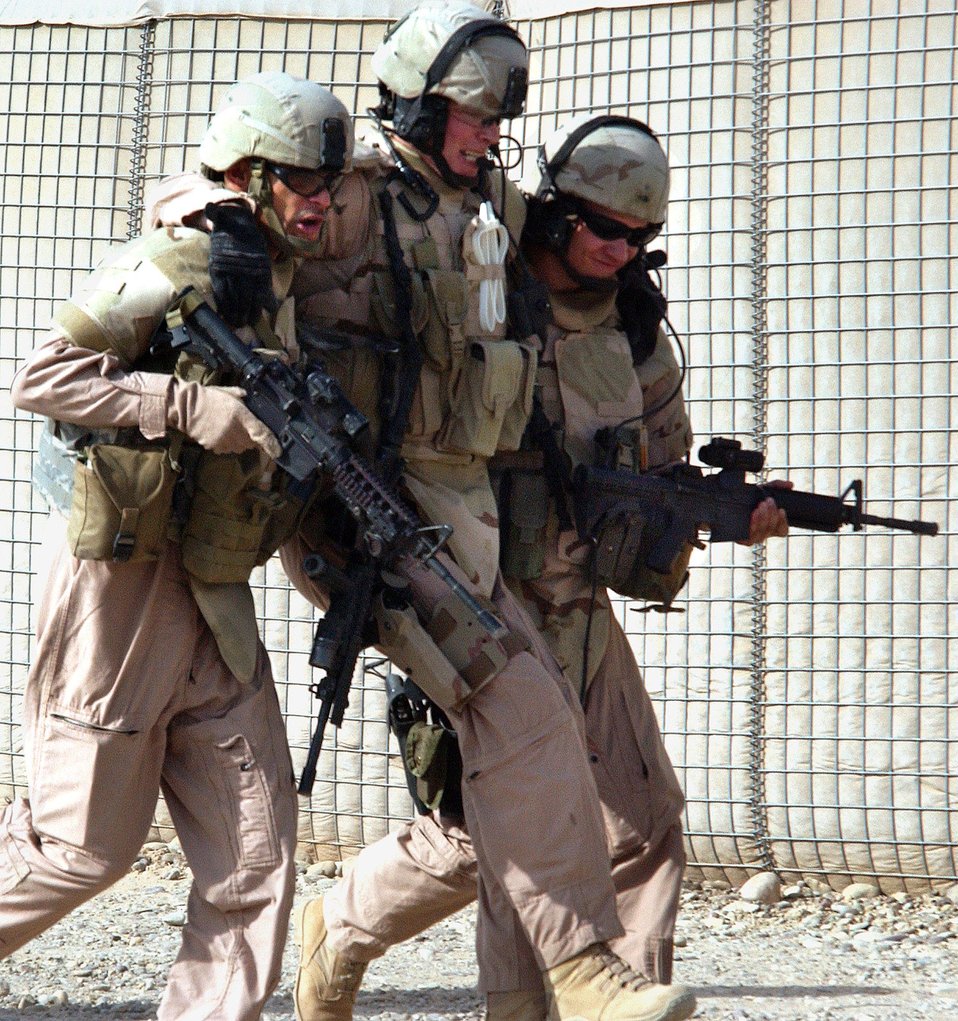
Airmen play key role in developing Iraqi police

Master Sgt. Killjan Anderson (left) and Senior Airman John Bretzik, help an